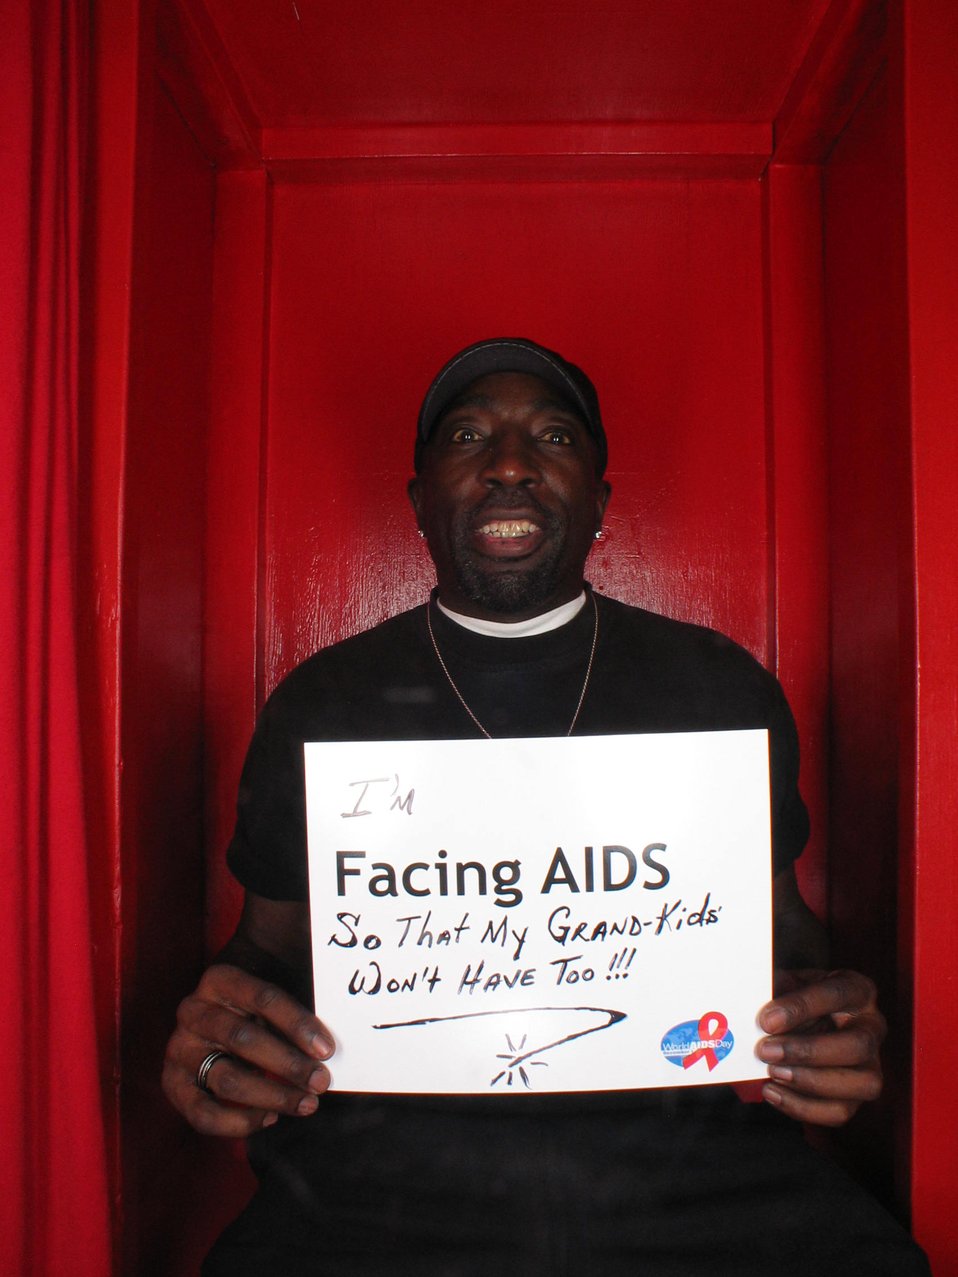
I'm Facing AIDS so that my generation won't have to